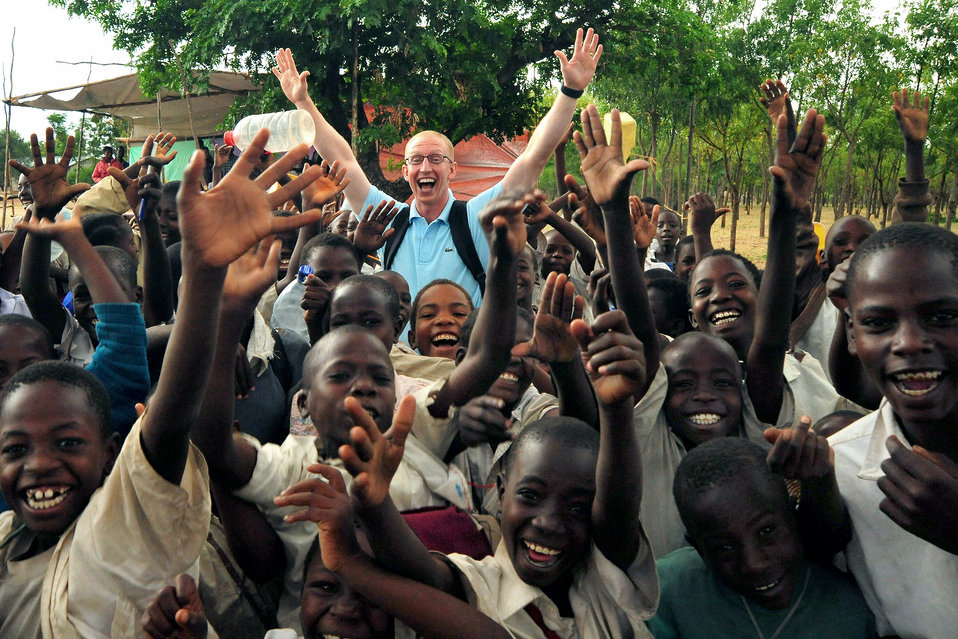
Let's celebrate!

Senior Airman Daniel McKittrick celebrates with children Jan. 21 before a water project dedication in Magu, Tanzania. The project will provide clean drinking water to villagers in the region. Airman McKittrick is a public affairs broadcaster with the Combined Task Force - Horn of Africa.